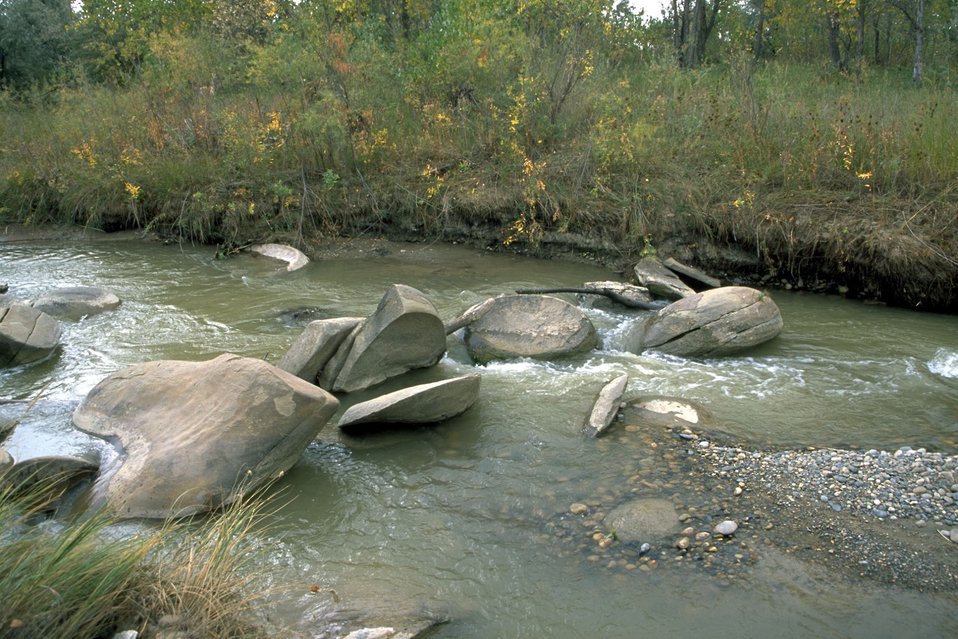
Large rocks in Jones Creek at Matthews Recreation Site